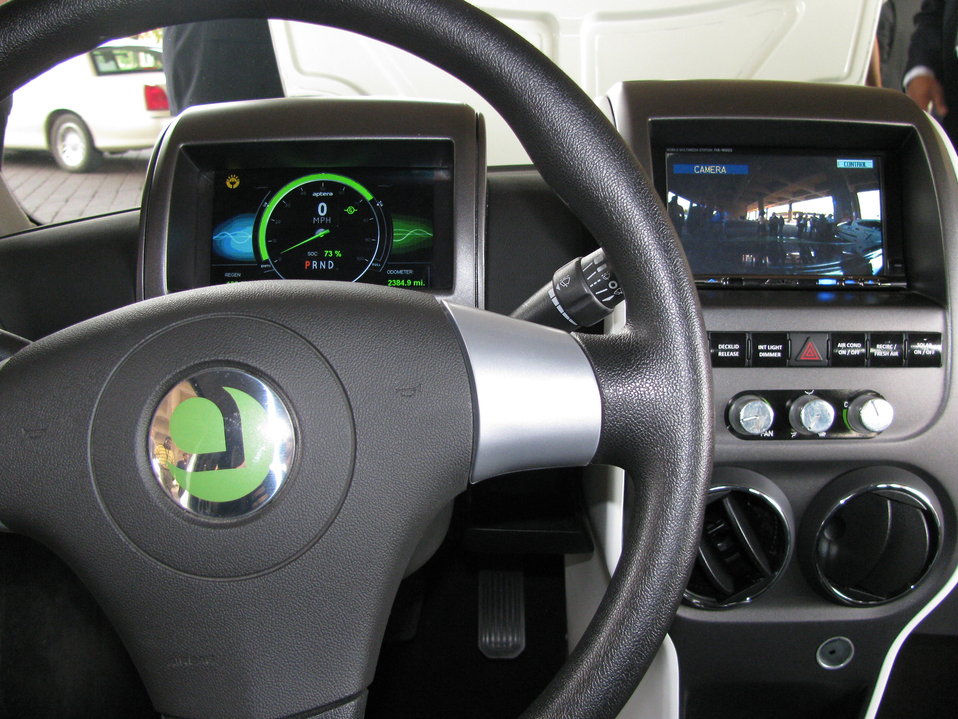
X Prize 067